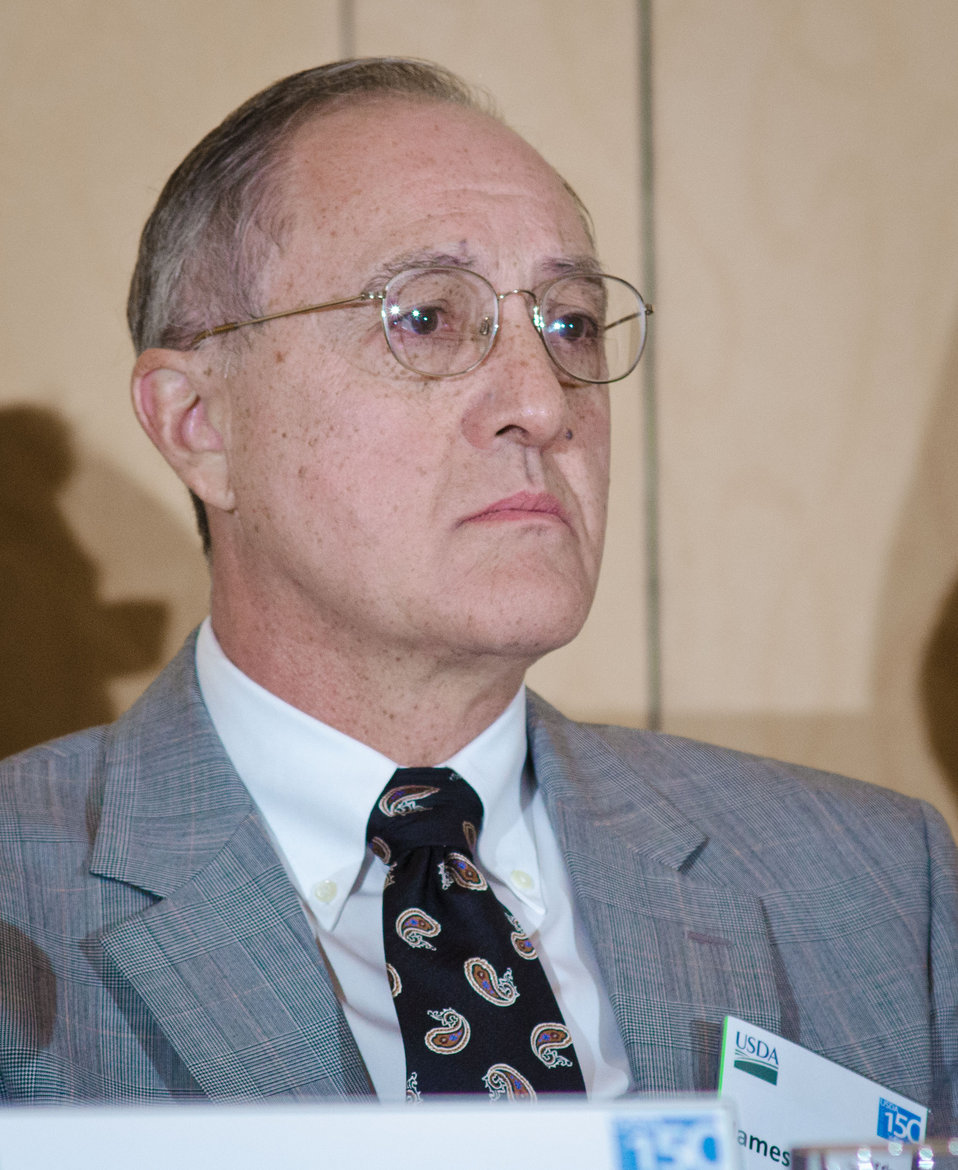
Texas A & M University Department of Agricultural Economics’ James Richardson talked about “Water Needs – Now and Into the Future” during the Rural Development session on “Why Every American Should Care About the Future of Rural Water,” at the 2012 Agricultural Outlook Forum, “Moving Agriculture Forward, Growing, Innovating and Celebrating 150 Years” held at the Crystal Gateway Marriott Hotel, Arlington, Virginia, on Friday, February 24, 2012. This year’s forum coincides with the 150th anniversary of the Department of Agriculture addressing economics, marketing, research, food safety, nutrition, conservation, rural development, alternative energy, trade and many other agricultural issues.